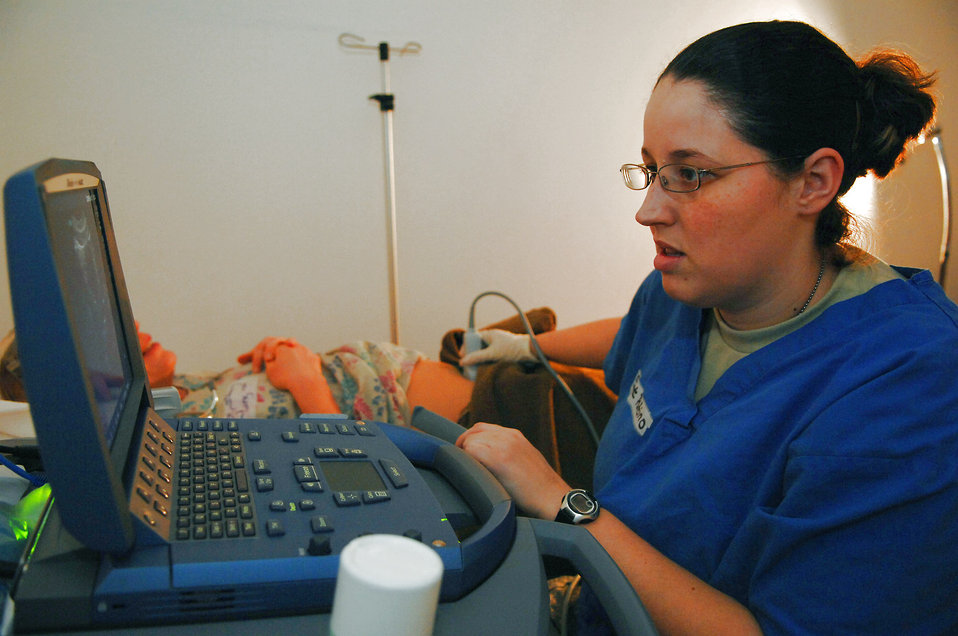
Airmen have X-ray vision

Staff Sgt. Crystal Patino performs a trans-abdominal ultrasound on a patient at the Air Force Theater Hospital Feb 20 at Balad Air Base, Iraq. Ultrasounds can be used to determine the presence of foreign growths, such as kidney stones. Sergeant Patino is a 332nd Expeditionary Medical Support Squadron radiology technologist and is deployed from Lackland Air Force Base, Texas.